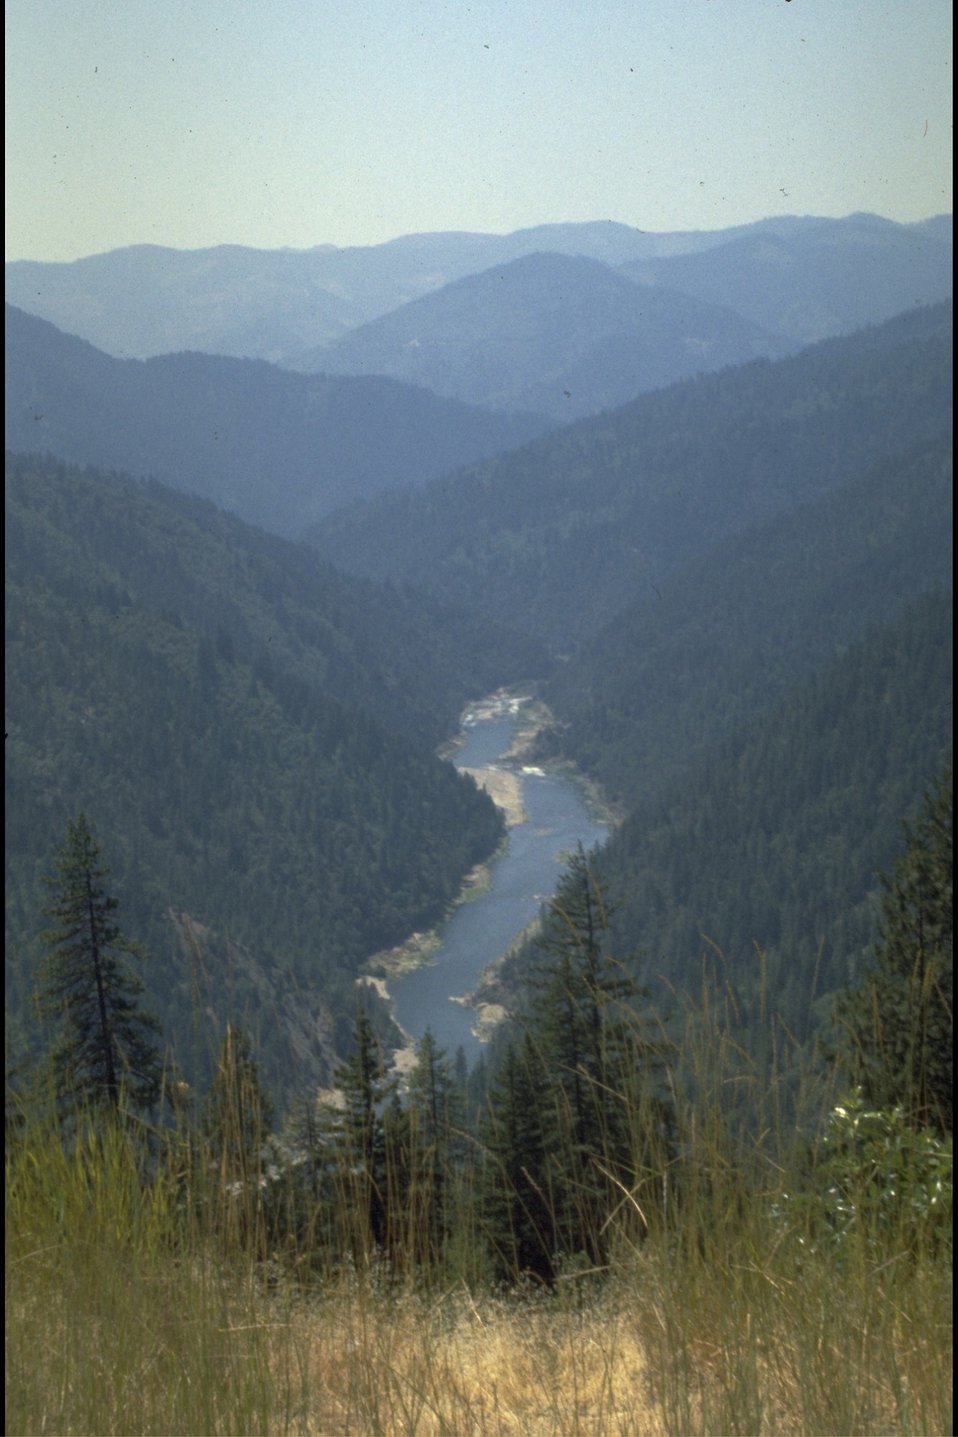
Rogue River - View from Jenkins Ridge.